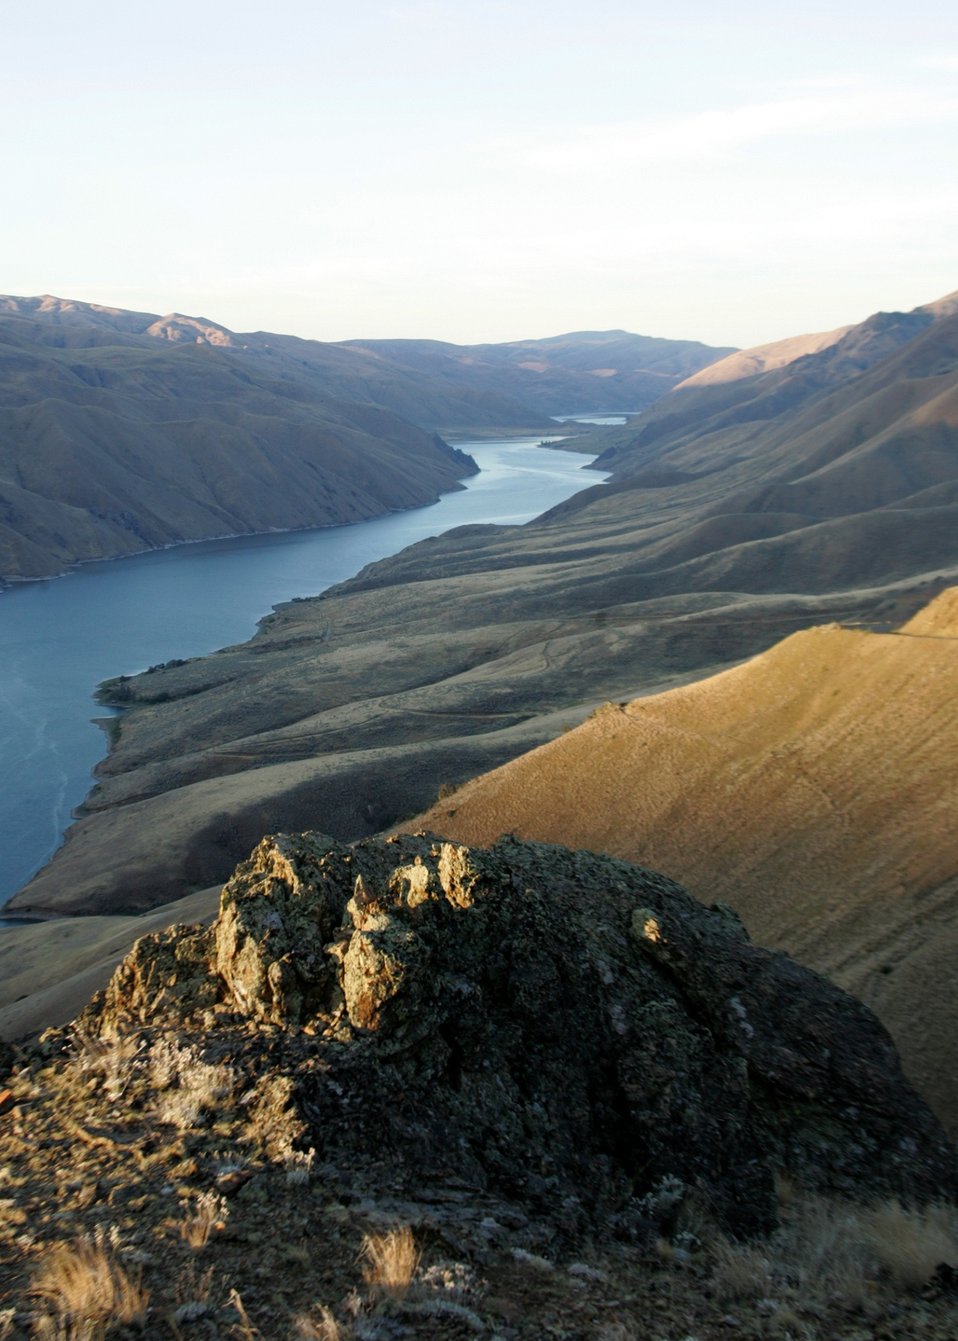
Sunrise on the Snake River Backcountry Byway.